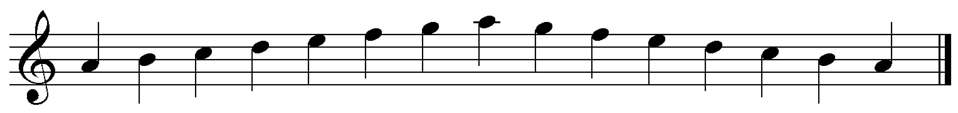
Musical scale in A minor (natural) Image file created with Sibelius software by Opus33. This music is in the public domain. The image is not copyrighted, and it is hereby released by Opus33 into the public domain. The following is the official Wikipedia tag for this file: